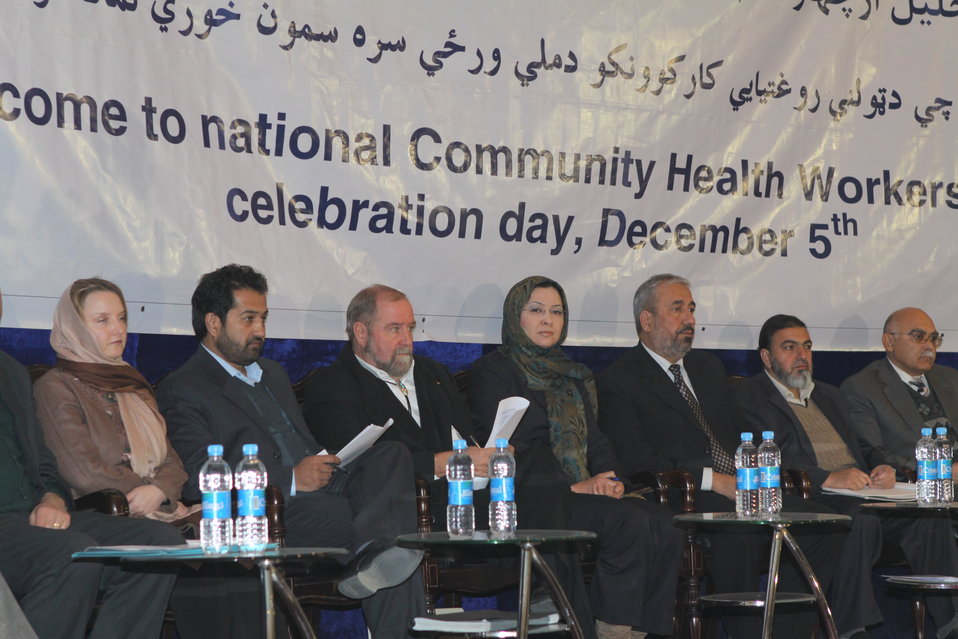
Community Health Workers Celebrated

Kabul, Afghanistan | December 5, 2010 — In support of the United Nations designated International Volunteer Day for Economic and Social Development, Afghanistan’s Ministry of Public Health celebrated its annual Community Health Worker Day today. Acting Minister of Public Health Dr. Suraya Dalil, USAID Senior Deputy Mission Director Robert Hellyer, other government officials, and international donors joined in recognizing the critical contribution of community health workers in Afghanistan and encouraging them to continue their voluntary support to their communities.
The event praised the contributions of the more than 22,000 volunteers throughout the country who deliver community level health-education, counseling, and services out of village health posts located in private homes. The Ministry of Public Health envisioned that community-based healthcare programs will actively encourage communities and families to adopt healthy lifestyles and behaviors, and provide families access to high quality and socially acceptable preventative medicine and life-saving services.
“We have 22,000 community health workers in Afghanistan that are able to implement the basic and standard medicines. They all have been trained through a job description,” said Minister Dalil. Addressing the health workers, she added, “I am proud and feel powerful that I have people like you.”
USAID-funded health projects collaborate closely with the Ministry of Public Health to improve the health and nutritional status of Afghans, provide quality primary healthcare, and promote healthy behaviors at the community and household-levels. USAID supported the training of more than 9,000 of the volunteer community health workers currently working in Afghanistan.
“On behalf of the American people, I congratulate the Community Health Workers for their diligence to gain the skills and knowledge necessary to serve their communities in this important role,” said USAID Senior Deputy Mission Director Hellyer. “USAID strongly supports community based health care and believes that quality community-based health services are essential to reaching Afghanistan’s Millennium Development Goals.”
To support the Basic Package of Health Services, USAID assisted in developing the community health worker training manual, helped train community health worker supervisors and master-trainers, facilitated in-service training, and produced and developed reporting tools, job aids, and education materials.